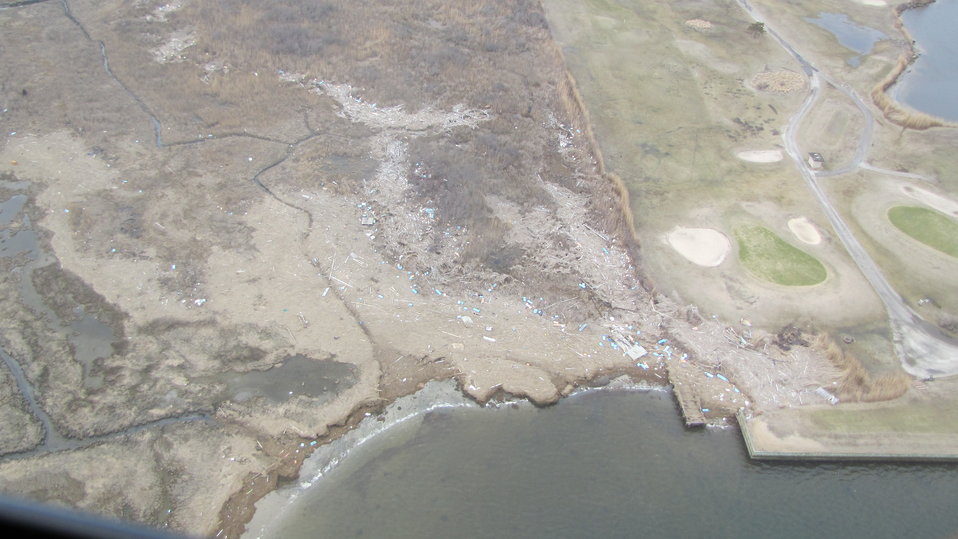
Debris at Lido Beach Wildlife Management Area

These damages were caused by Hurricane Sandy.